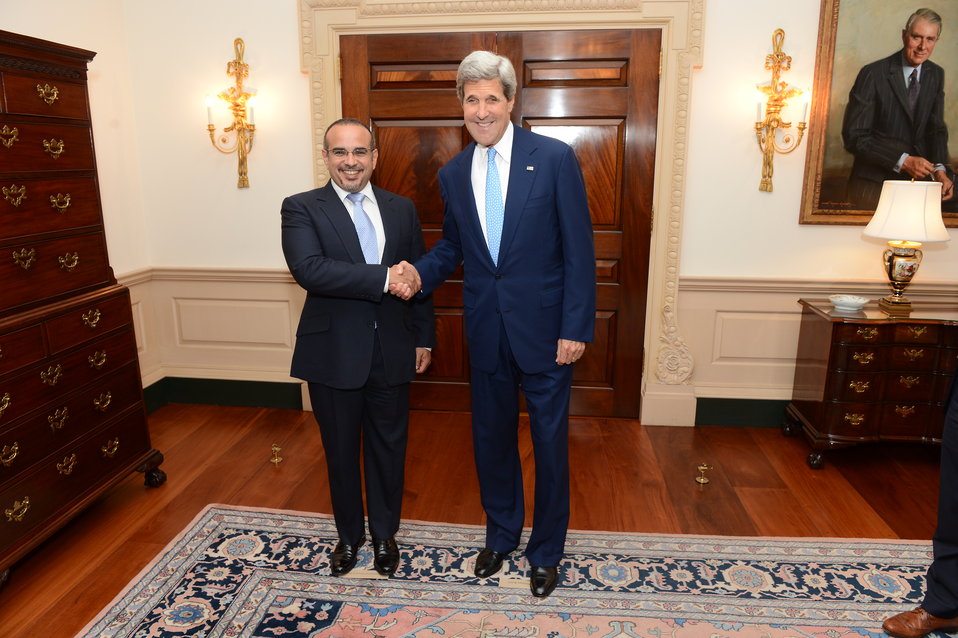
Secretary Kerry Shakes Hands With Bahraini Crown Prince Salman bin Hamad Al-Khalifa

U.S. Secretary of State John Kerry shakes hands with Bahraini Crown Prince Salman bin Hamad Al-Khalifa before their bilateral meeting at the U.S. Department of State in Washington, D.C., on June 6, 2013.